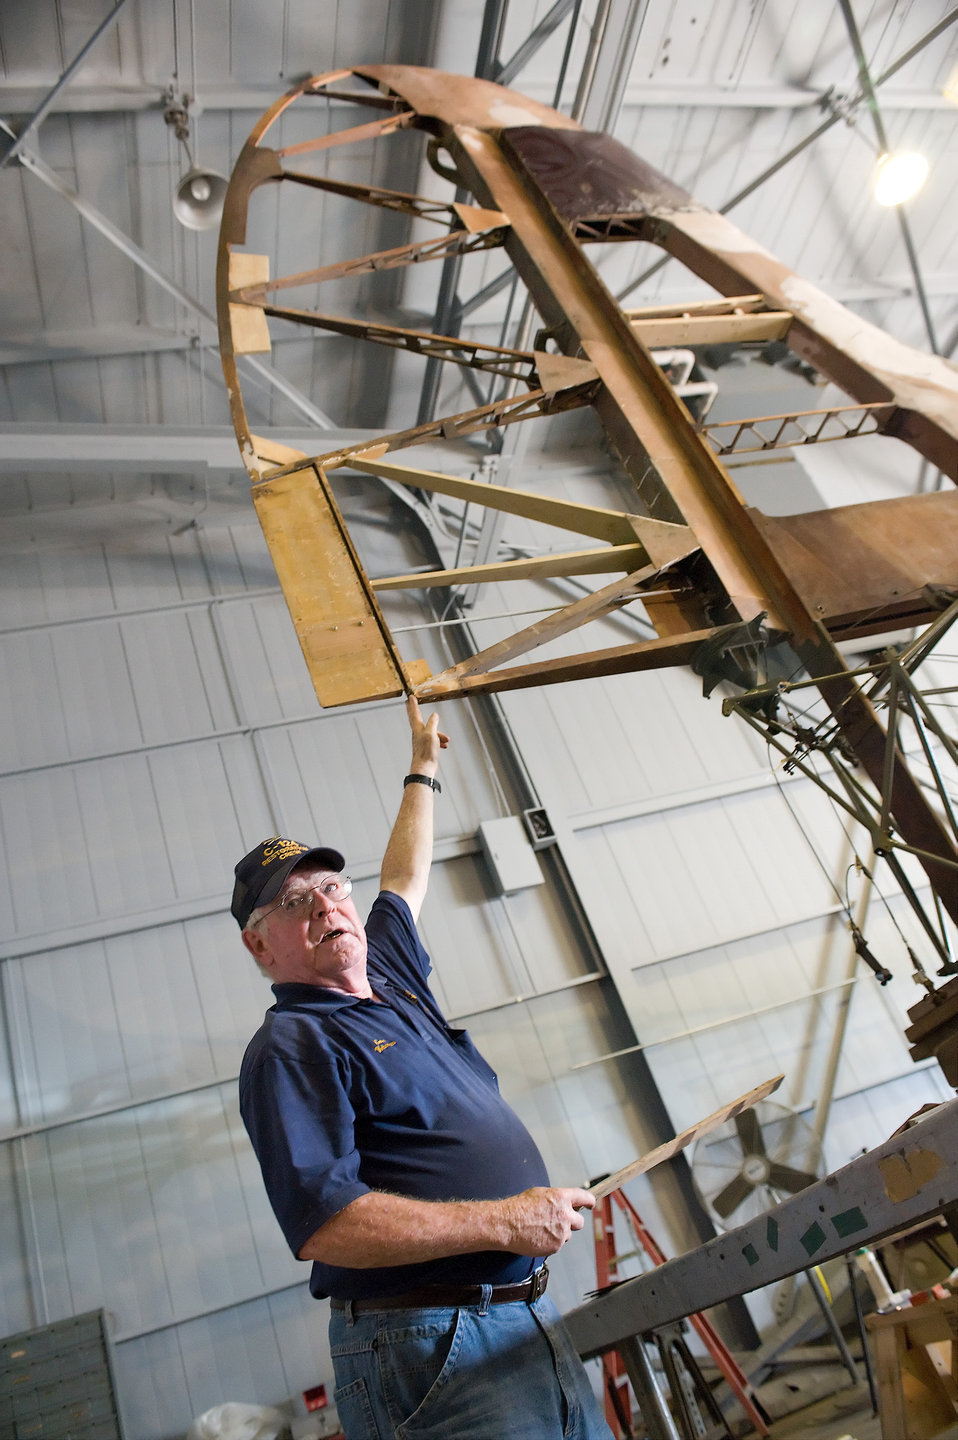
Restoring memories

Gene Williams, a restoration volunteer, demonstrates the newly constructed tail of a Waco CG-4A Combat Glider June 23, 2011, at the Air Mobility Command Museum at Dover Air Force Base, Del. The glider is being completely restored from scrap.